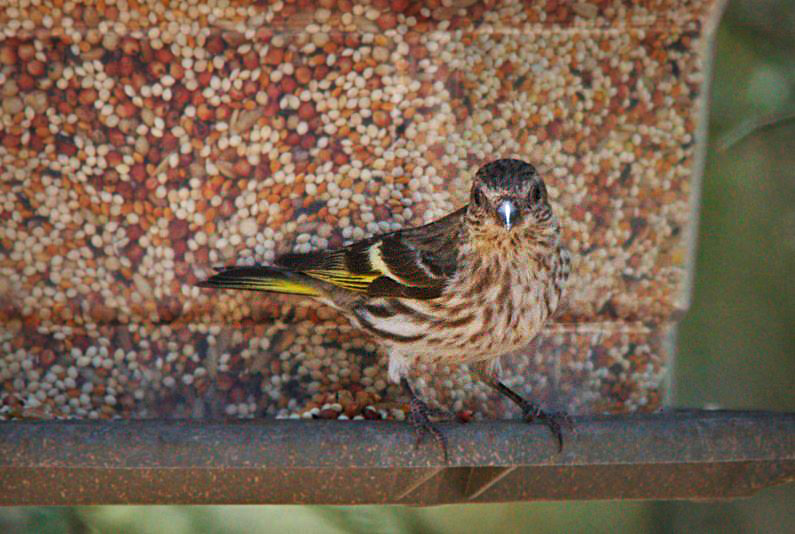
Pine Siskin-3

A pine siskin on a feeder at Sonny Bono National Wildlife Refuge in May 2013. This nomadic finch ranges widely and erratically across the continent each winter in response to seed crops. Better suited to clinging to branch tips than to hopping along the ground, these brown-streaked acrobats flash yellow wing markings as they flutter while feeding or as they explode into flight. Flocks are gregarious, and you may hear their insistent wheezy twitters before you see them.